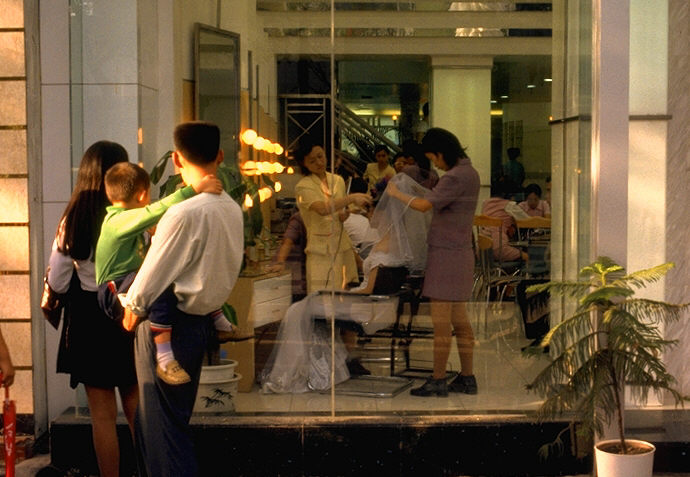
Bridal shop workers putting finishing touches on bride as another family looks on, Xian, Peoples Republic of China.